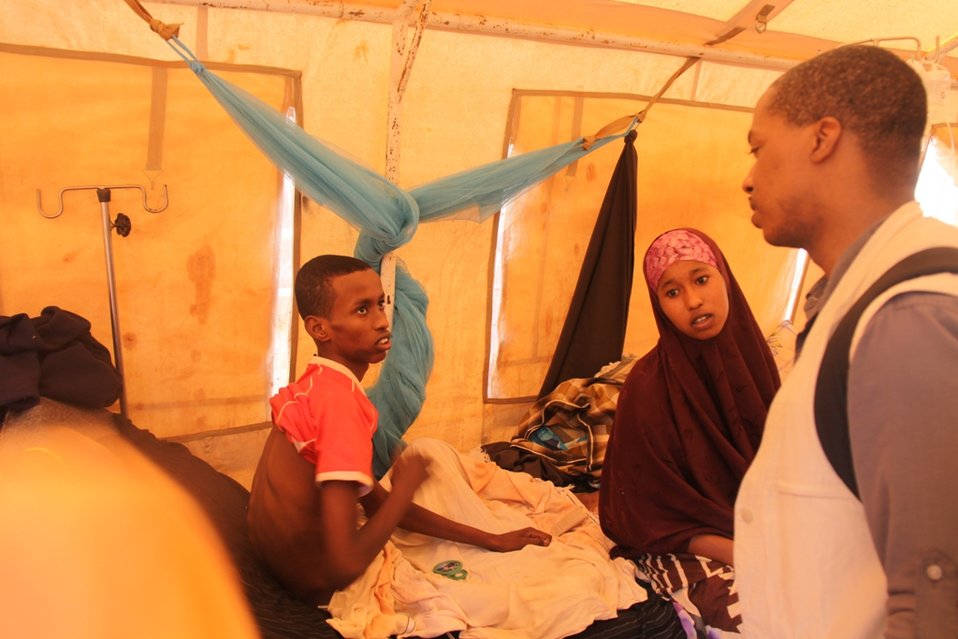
Deputy Assistant Secretary Brigety Visits a Hospital in Dadaab, Kenya

Deputy Assistant Secretary Reuben Brigety talks with a paralyzed gunshot victim while in Dadaab, Kenya on July 13, 2011.